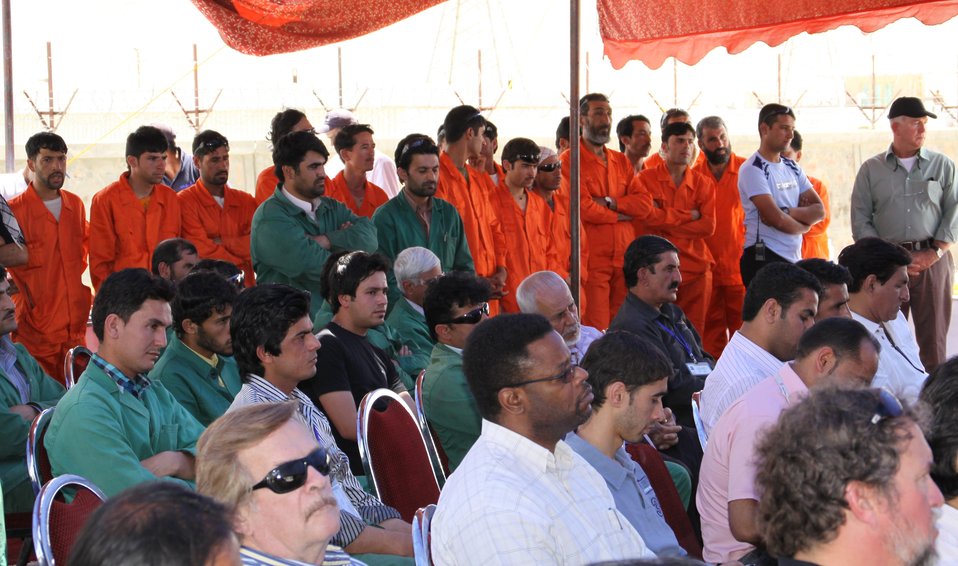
105 MW Tarakhil Power Plant Handover